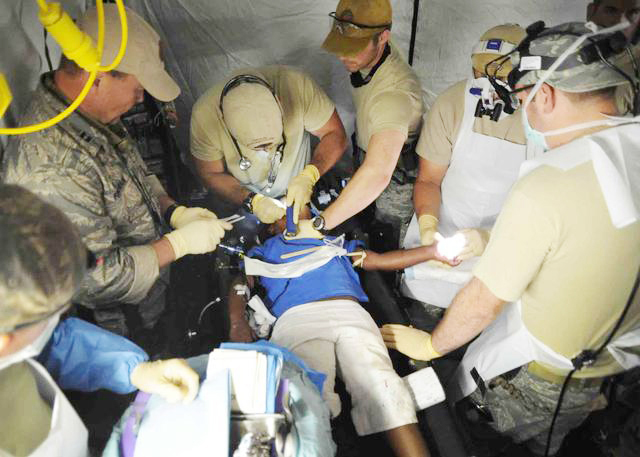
Haiti Earthquake Relief

Airmen with the 1st Special Operations Support Squadron offer medical assistance to a Haitian girl Jan. 16, 2010, at the Toussaint L'Ouverture International Airport in Port-au-Prince, Haiti.